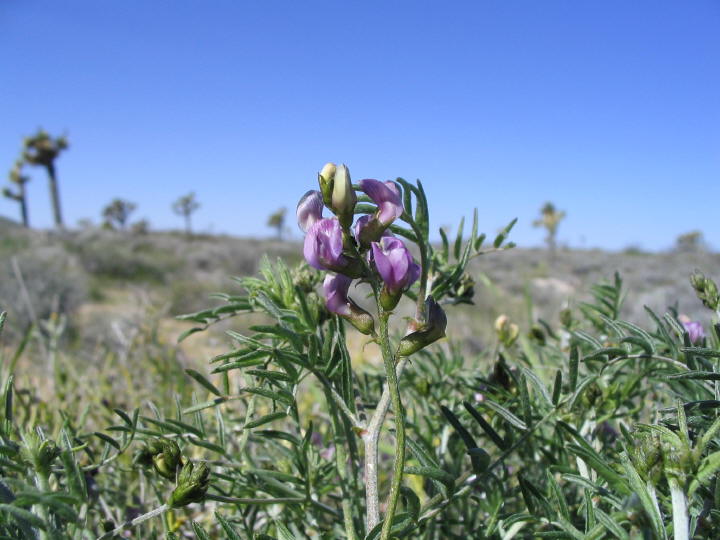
Lane Mountain milk-vetch

The endangered Lane Mountain milk-vetch in the west Mojave Desert, California. Lane Mountain milk-vetch is a perennial herb in the pea family. It has the unusual habit of using its twining branches to grow up inside other 'host shrubs' for support.